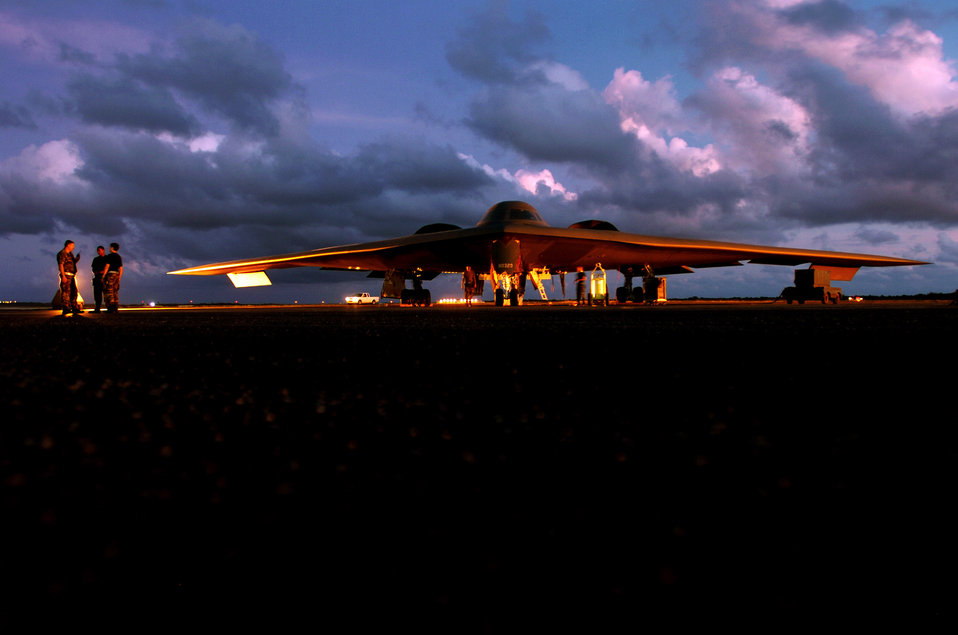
Spirits begin to soar

A B-2 Spirit bomber is prepared for a morning mission at Anderson Air Force Base, Guam. The aircraft is from the 509th Bomb Wing at Whiteman Air Force Base, Mo.